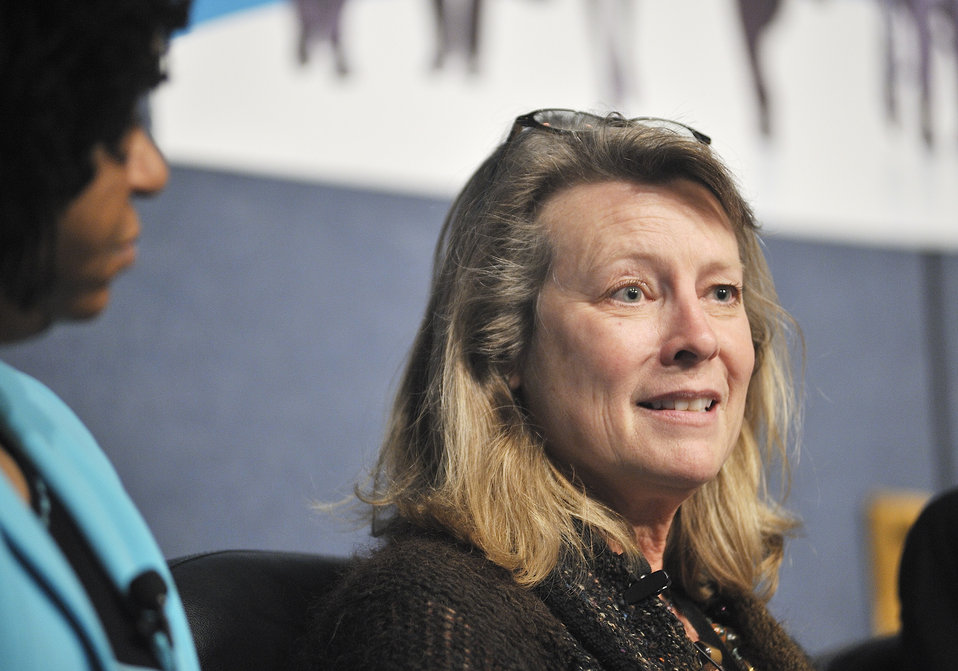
Anita Decker, Chief Operating Officer, Bonneville Power Administration, participates in the panel discussion.